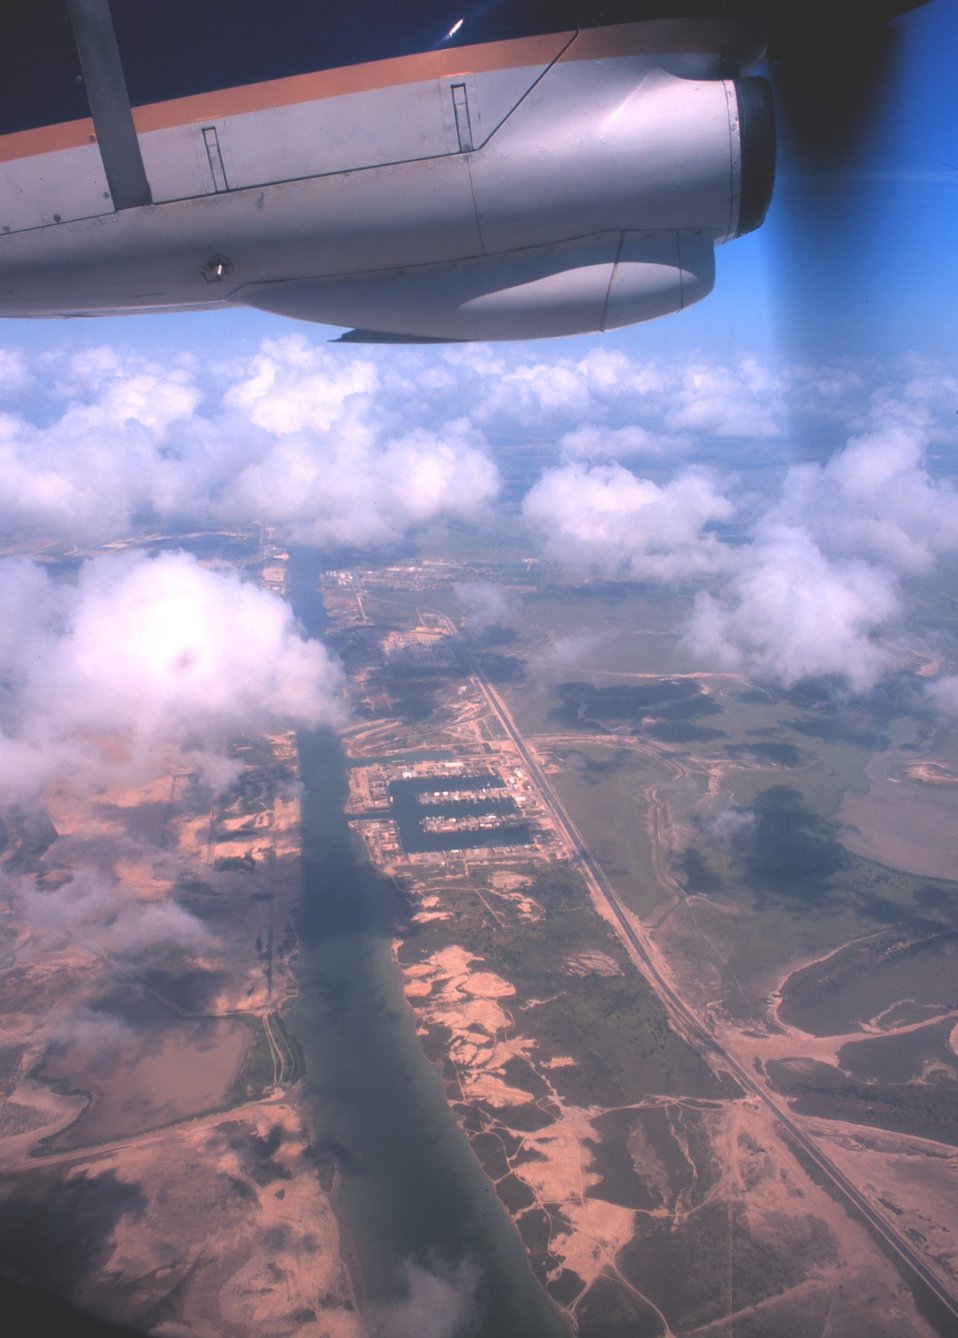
View of the shrimp basin, the giant 'E', and the intracoastal waterway